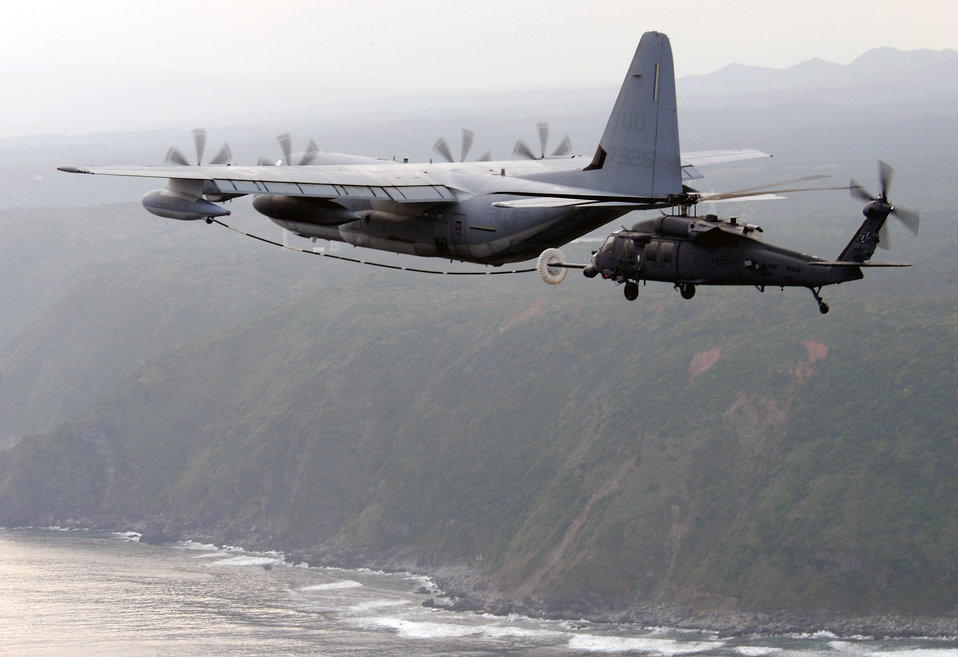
Helicopter pilots train Japanese forces on air refueling

An HH-60G-Pave Hawk from the 33rd Rescue Squadron receives fuel from an MC-130 during a three-day intensive air refueling course March 24 at Kadena Air Base, Japan. Pilots from the 33rd RQS put together a refueling training program for Japanese Self Defense Force helicopter pilots to provide them the tools to begin conducting long-range rescue missions.